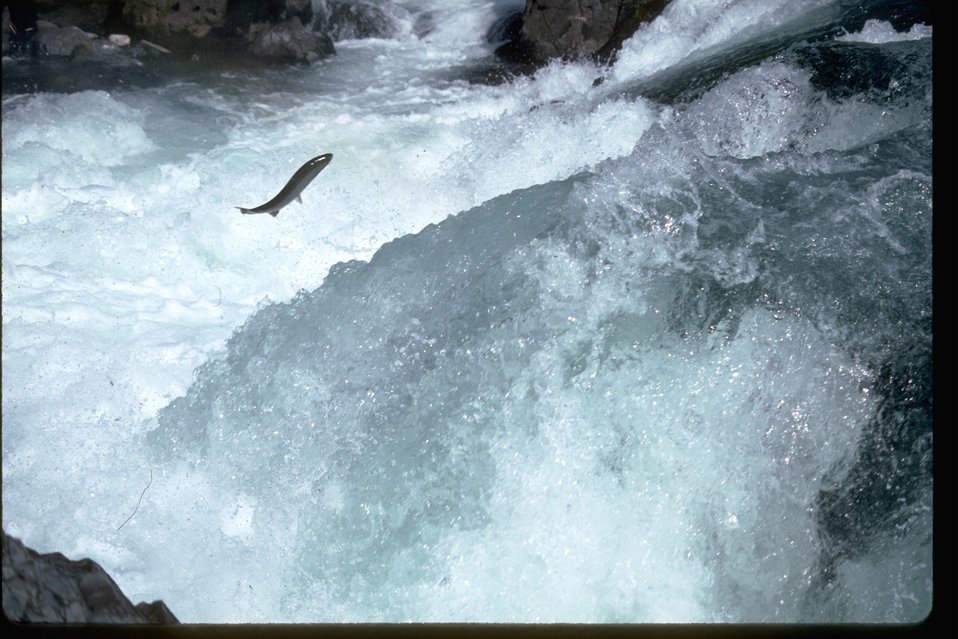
Salmon or Steelhead jumping up falls.